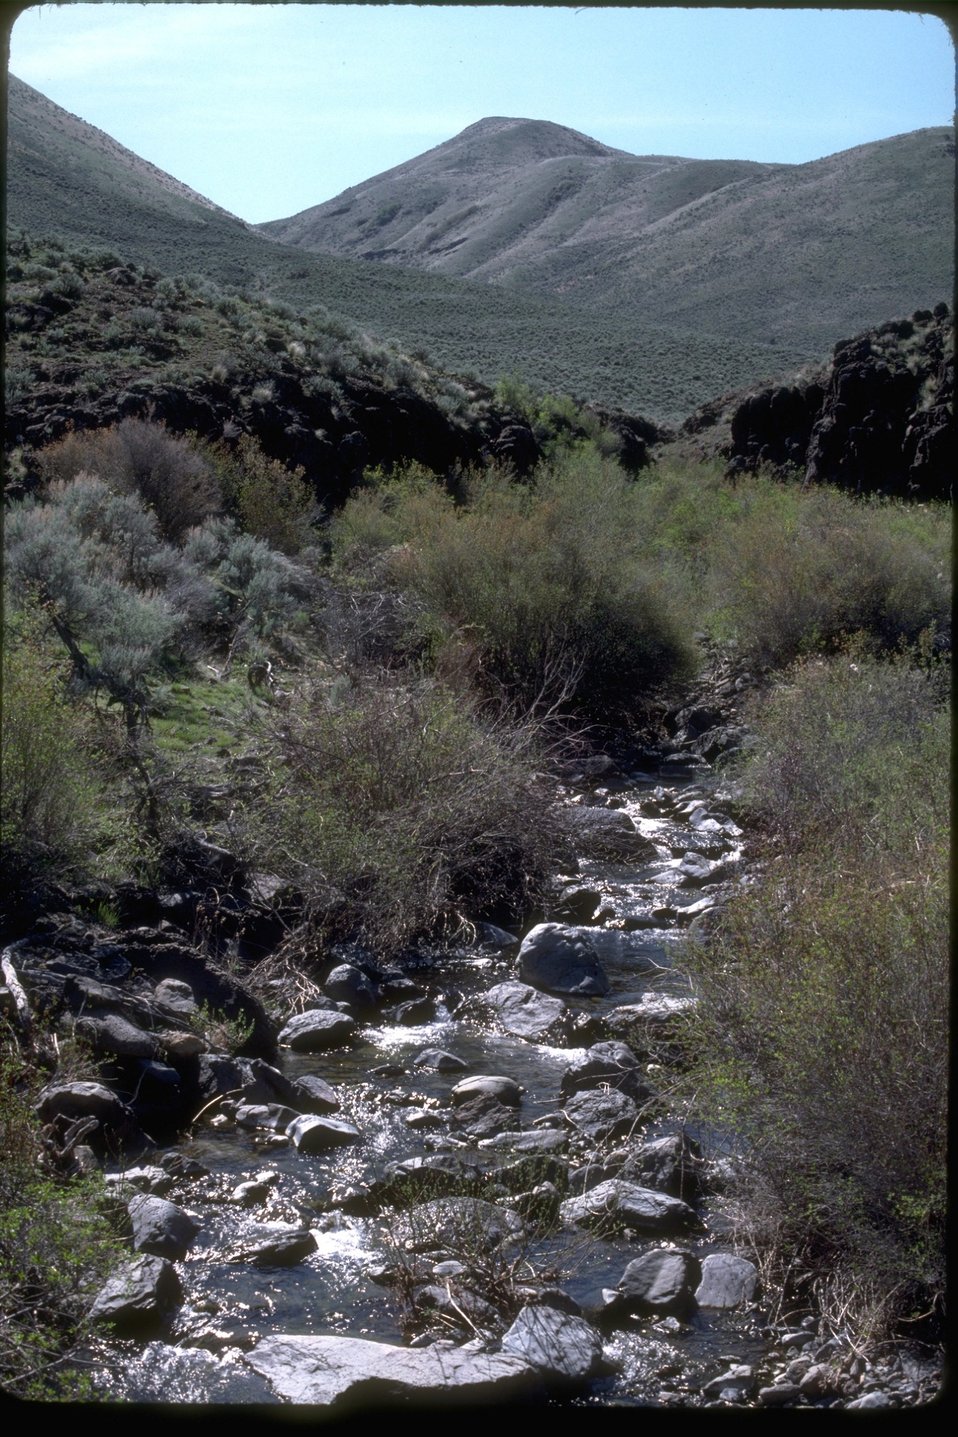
Riparian area willows along the banks of Gold Creek. OR 3-33